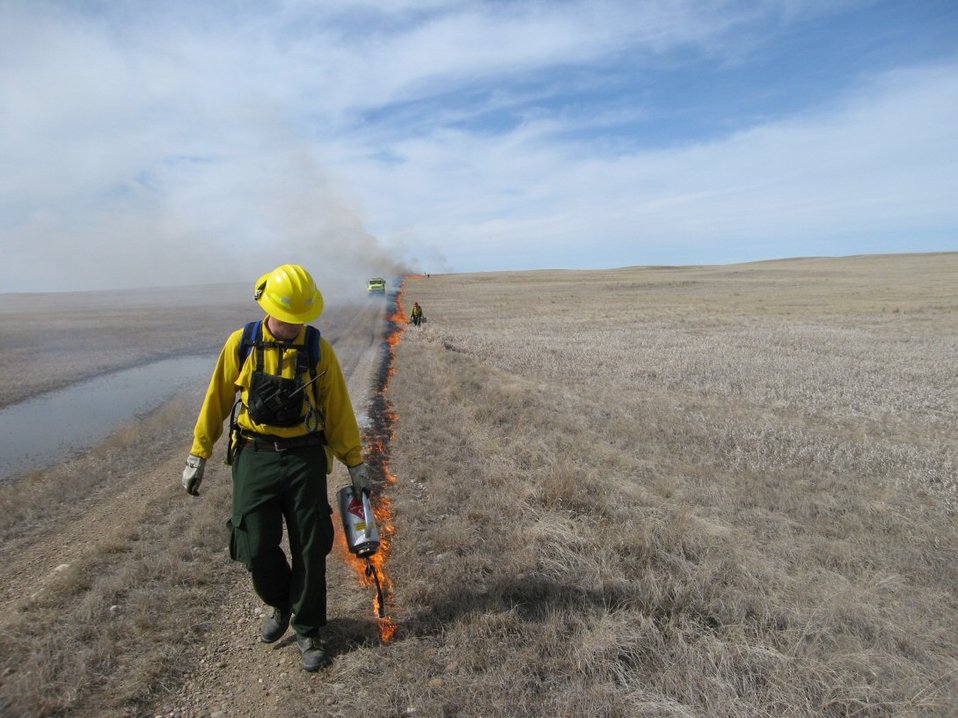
Lining Out

A prescribed fire is always conducted in accordance with an approved fire plan and restricted to a specific area under strict environmental conditions. A prescribed fire is sometimes referred to as a controlled burn.